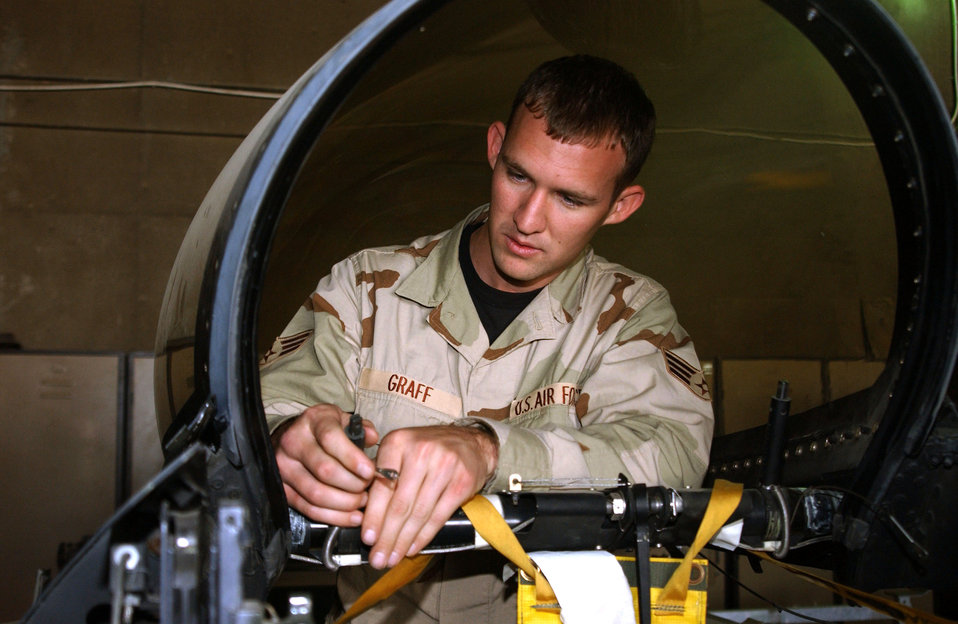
Egress maintainers give pilots a sense of security

Senior Airman Steven Graff conducts a canopy inspection on an F-16 Fighting Falcon Oct. 10 at Balad Air Base, Iraq. Airman Graff is an aircrews egress systems journeyman assigned to the 332nd Expeditionary Aircraft Maintenance Squadron.